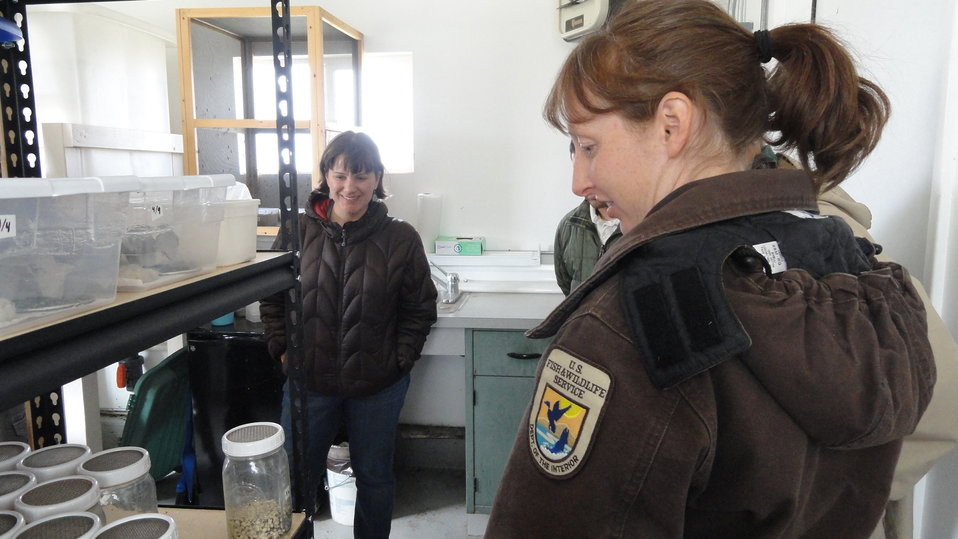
Visiting Saratoga National Fish Hatchery

In April of 2014, regional office employees visited Saratoga National Fish Hatchery to learn more about its efforts towards recovering the Wyoming toad (Bufo baxteri).

The hatchery adopted a unique role in becoming the first unit in the National Fish Hatchery System to become involved in rearing endangered amphibians. The Wyoming toad was a common sight on areas of the Laramie Plains, Albany County, Wyoming, into the early 1970s but the species' populations crashed in the mid-1970s. The Wyoming toad was listed as endangered by the U.S. Fish & Wildlife Service in January 1984. Found only in southwestern Wyoming, the Wyoming toad is considered the most endangered amphibian in North America. The hatchery maintains a captive population for breeding, rearing, and refugia, and the offspring from this program will be used for reintroduction efforts.